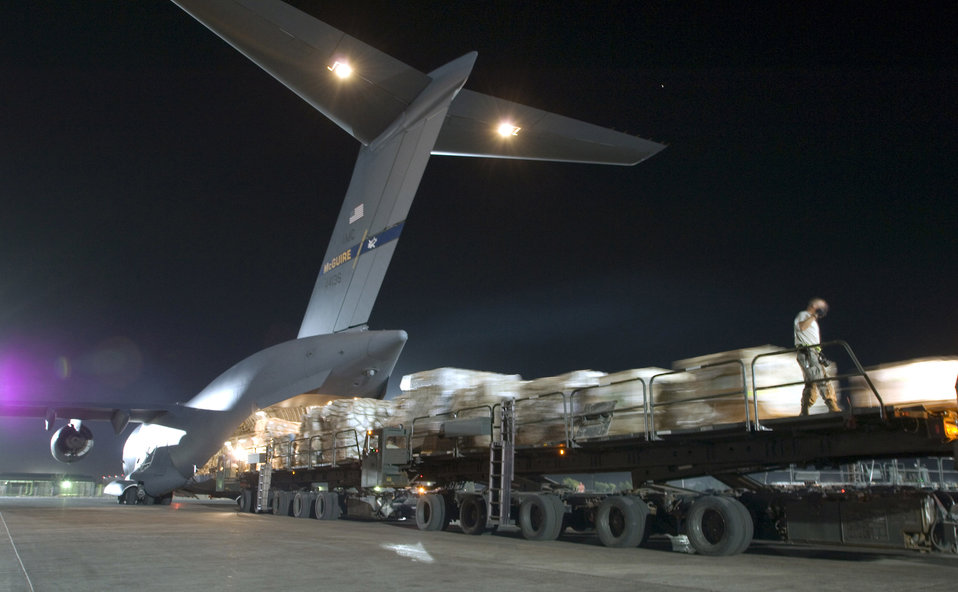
Open wide!

Airmen load more than 56,000 pounds of cargo from three Tunner 60K loaders onto a C-17 Globemaster III Aug. 3 at Joint Base Balad, Iraq. More than 950 cargo aircraft, 12,000 tons of cargo and 19,000 passengers are processed each month, making it the busiest aerial port operation in the Department of Defense. This C-17 is deployed from the 305th Air Mobility Wing at McGuire Air Force Base, N.J.